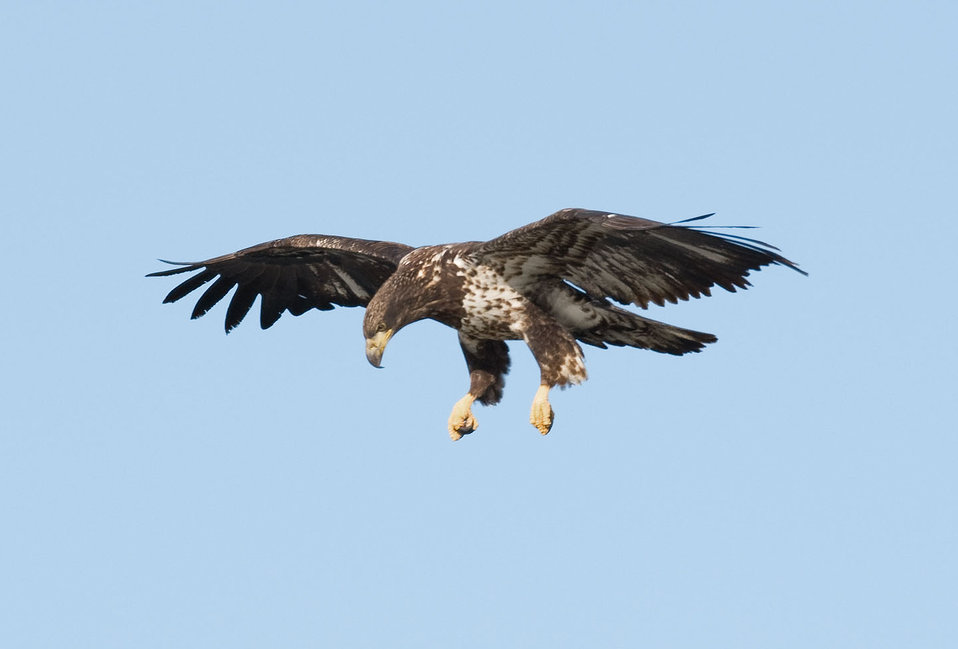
Juvenile Bald Eagle

The lands of the refuge were established to protect and provide habitat for migratory birds that cross State lines and international borders and are by law a Federal trust responsibility.

The refuge is of great value to waterfowl and shorebirds, as well as other migrating water-dependent bird species, because of the diversity of wetland and upland habitats that provide for the diverse life cycle needs of these species.